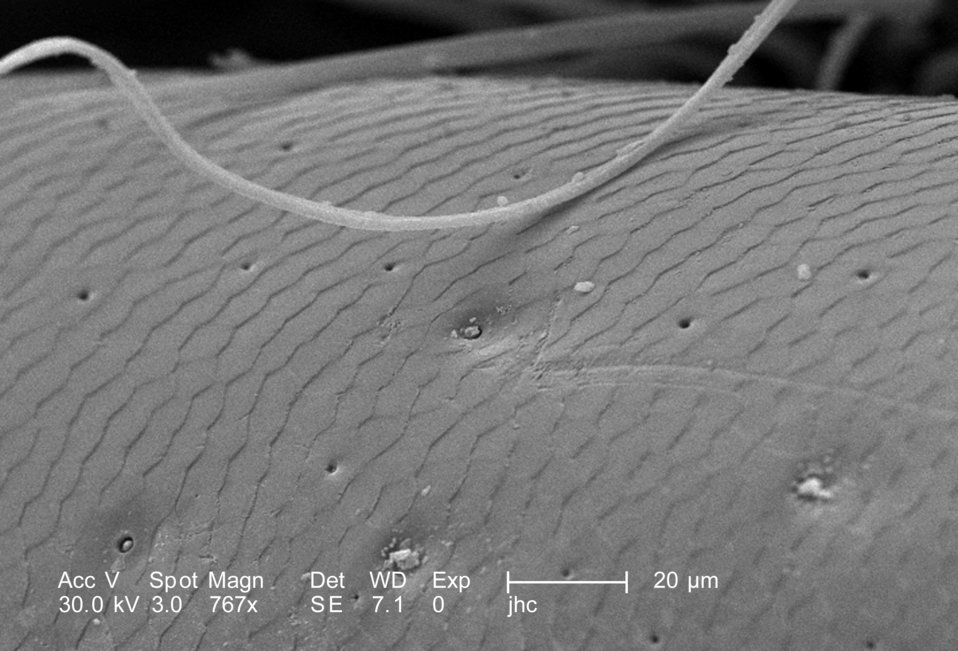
Magnified 767X, four times greater than PHIL 9935, this scanning electron micrograph (SEM) revealed morphologic details found at the distal tip of this adult 'figeater' beetle's, Cotinis mutabilis, maxillary 'palpus', which emanates bilaterally from the maxillae lateral to each bilateral 'galea'. It is comprised of one to six segments, and each is attached to each maxilla by a exoskeletal structure known as the 'palpifer'.